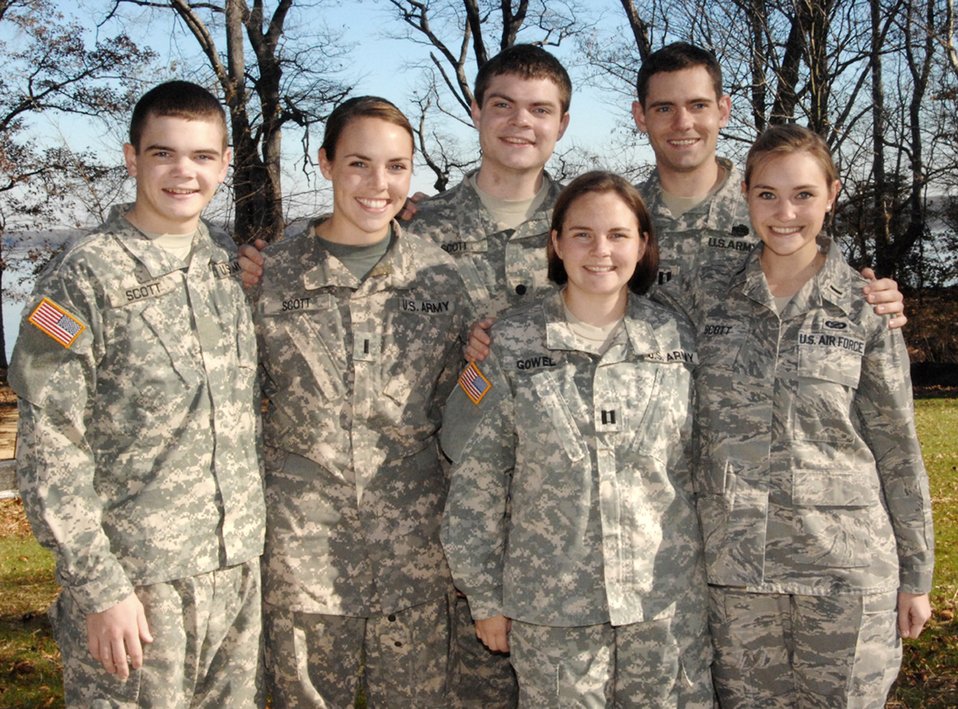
Military Academy Cadets

Clockwise from left, U.S. Military Academy Cadet Adam Scott, Army 1st Lt. Kerney Scott, now Army Reserve 2nd Lt. Alec Scott, Army Capt. Andy Scott, now Air Force Capt. Karoline Scott and Army Capt. Kate Gowel pose at their parents' house in Lorton, Va. The Scott children all chose to join the military, carrying on a legacy of active-duty service that's lasted more than 130 years.